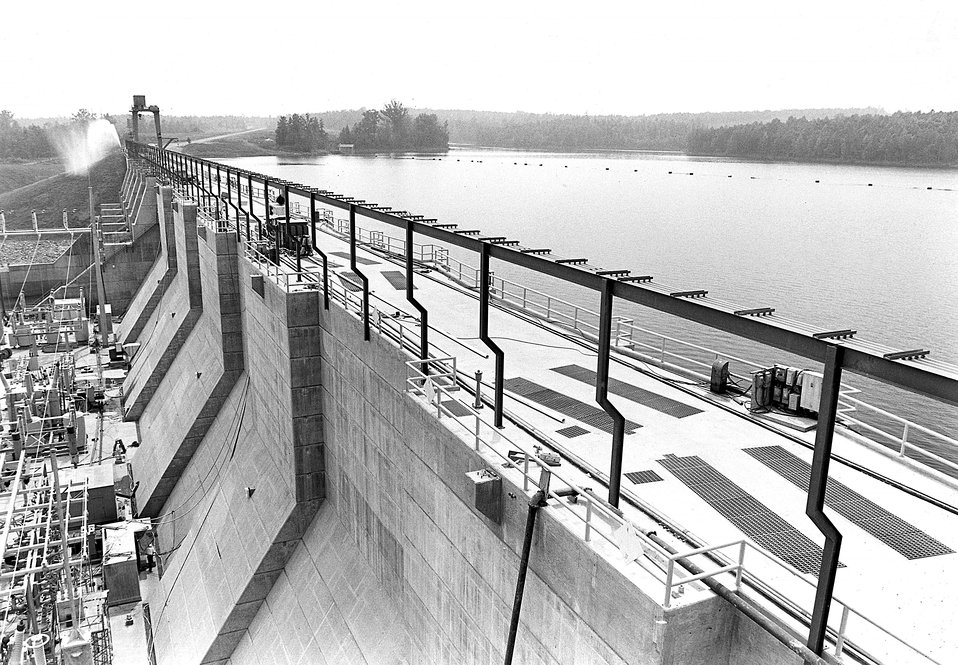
When completed in 1980, Wallace Dam nearly doubled the hydroelectric capacity of the Georgia Power Co. system. c. undated